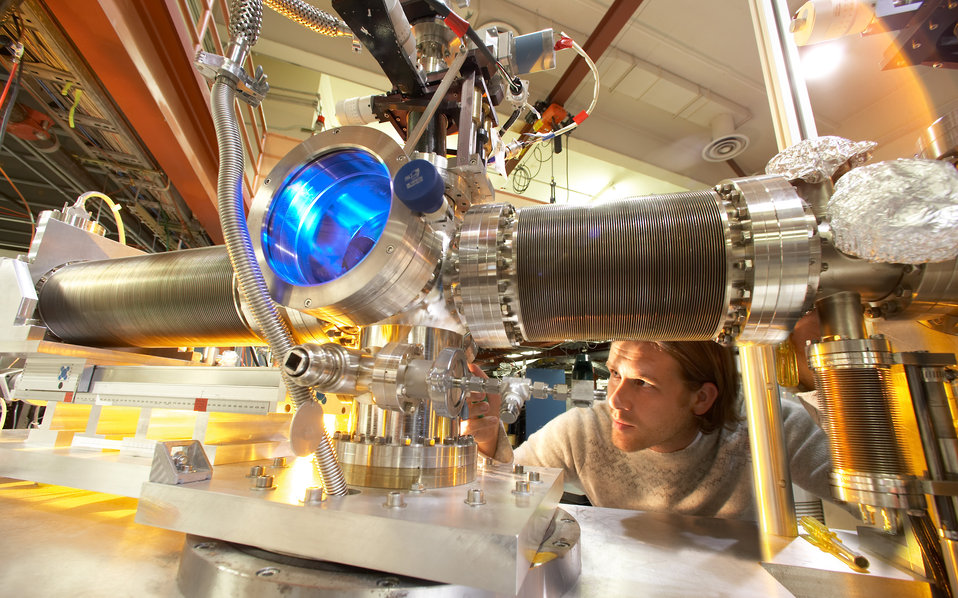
STANFORD SYNCHROTRON RADIATION LIGHTSOURCE'S BEAMLINE 5-1, IS USED FOR SOFT X-RAY IMAGING.

SSRL is a division of Stanford Linear Accelerator Laboratory (SLAC) devoted to research using synchrotron radiation, the electromagnetic radiation emitted when charged particles travel in curved paths. SSRL is funded by DOE as a national user facility.